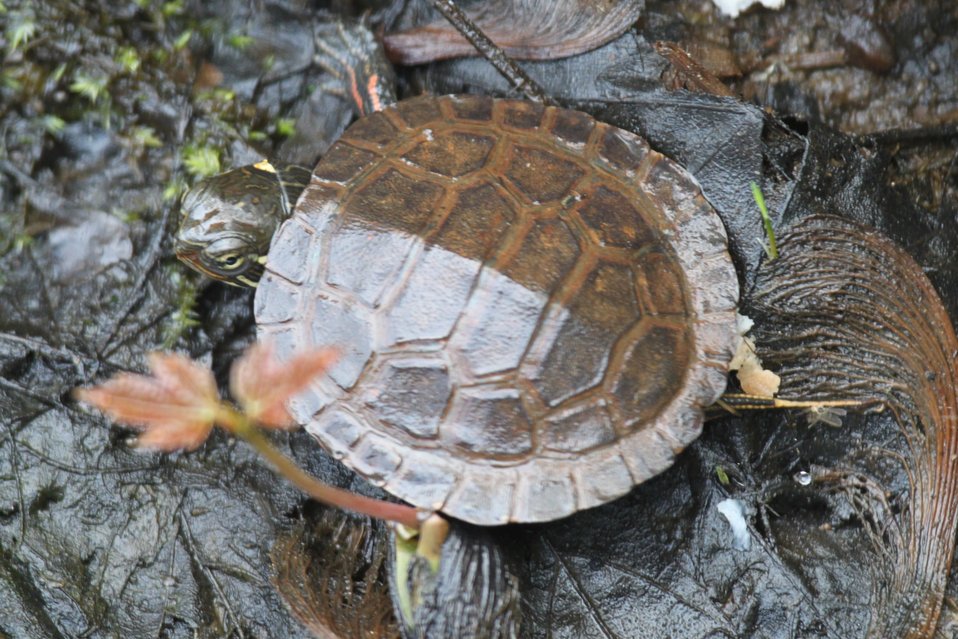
Hatchling painted turtle

Baby map turtle at Missisquoi National Wildlife Refuge